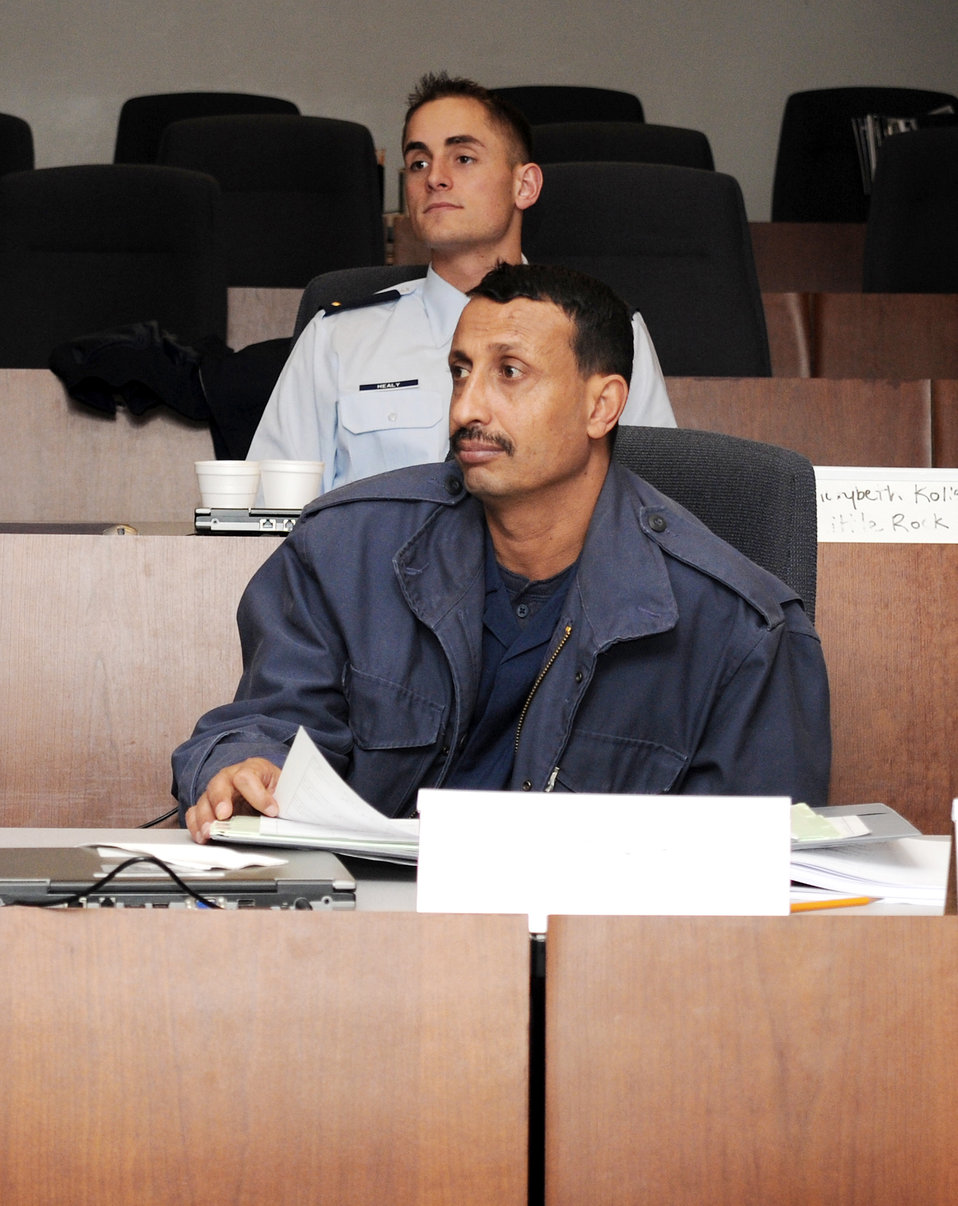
Expeditionary Center Airmen host Yemen air force student

Yemeni air force Capt. Abdurabu Al Matari joins 10 Air Force maintenance officers receiving training on aircraft maintenance management at the Air Force Expeditionary Center's Maintenance Officer Course Feb. 8, 2010, at Joint Base McGuire-Dix-Lakehurst, N.J. The course provides a strategic communication opportunity for the Expeditionary Center.